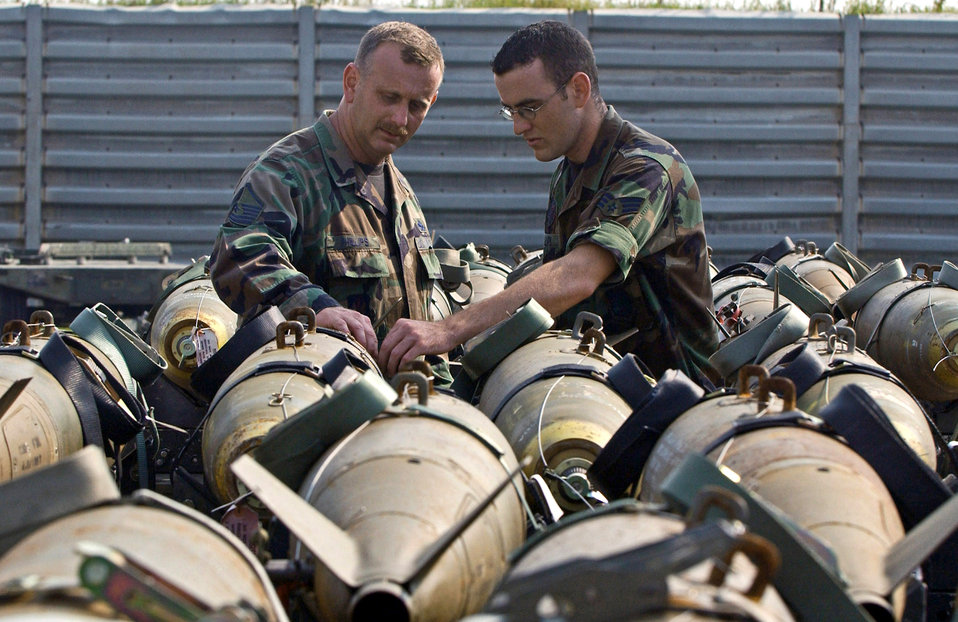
All in the family

Master Sgt. Torre Phillips (left) inspects an MK-82 bomb Sept. 13 at Kunsan Air Base, South Korea, with his son, Senior Airman David Phillips. Sergeant Phillips is deployed to Kunsan for a four-month rotation while his son completes his one-year remote tour here.